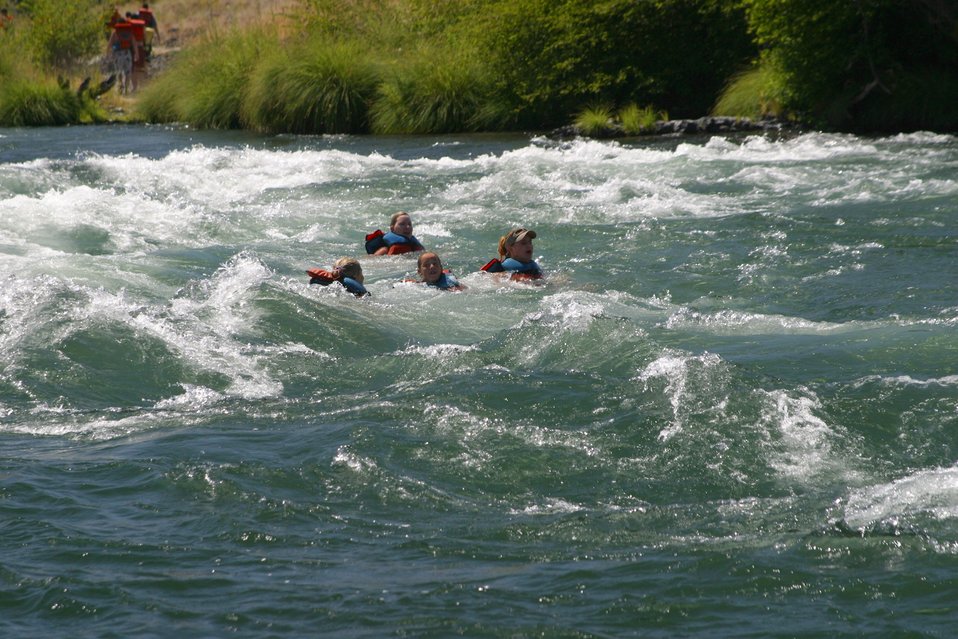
Elevator Rapids near Mile 46 on the Lower Deshcutes River. 7/26/03 Pelton Dam 3600 cfs: Moody Rapids 4300 cfs.